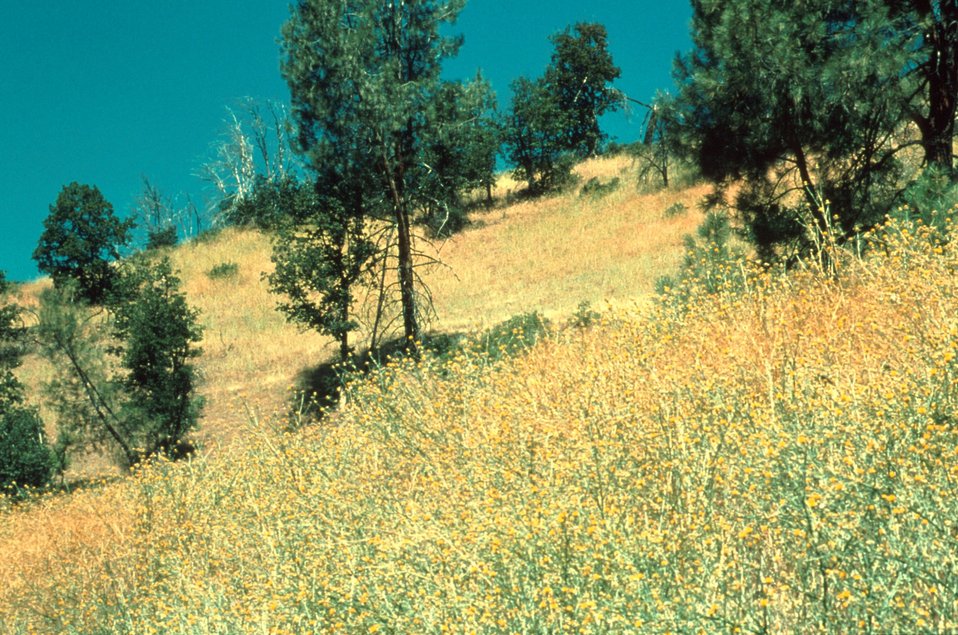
Yellow Starthistle in northern California Dominates over 10 million acres Idaho vegetation Plants in BLM